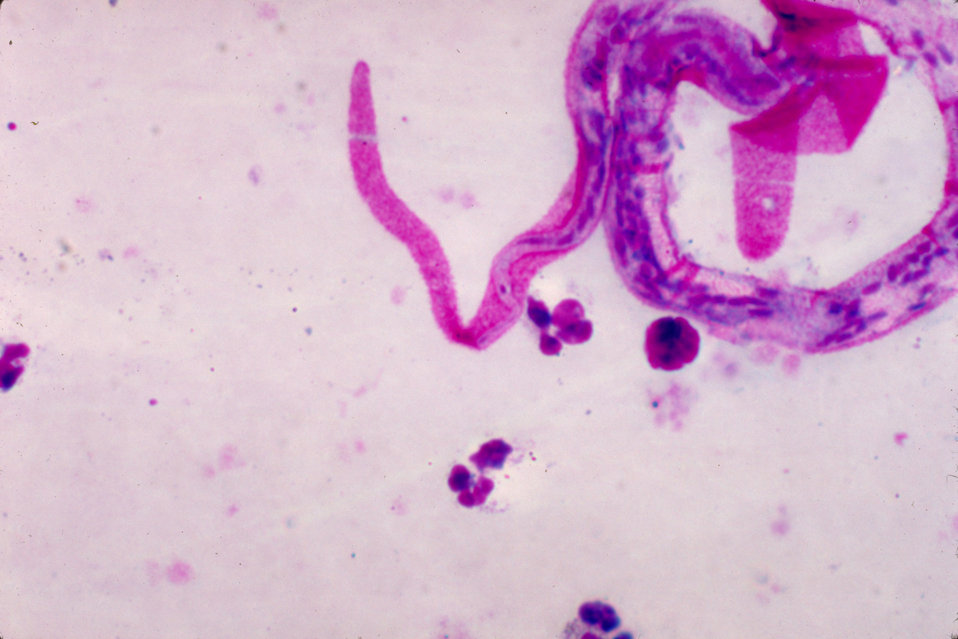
This is a micrograph of the posterior end of a Brugia malayi microfilaria in a thick blood smear using Giemsa stain.